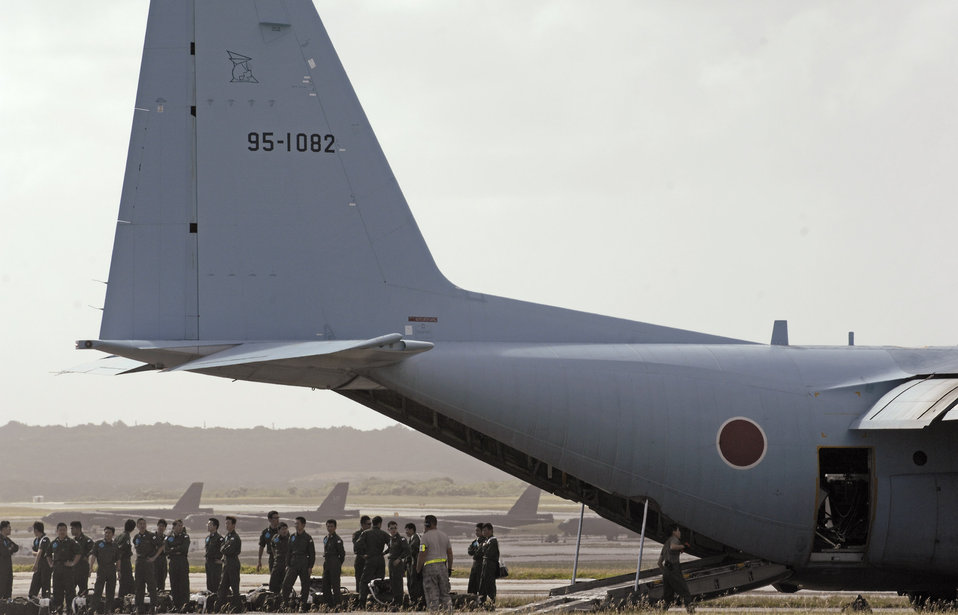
Japan forces arrive in Guam for joint exercise

Japan Air Self Defense Force members wait outside of their C-130 after arriving Jan. 27 at Andersen Air Force Base, Guam. More than 60 JASDF members arrived in three C-130s to participate in Exercise Cope North 09-1, a regularly scheduled exercise scheduled for Feb. 2 through 13. Cope North is designed to enhance U.S. and Japanese air operations in defense of Japan. JASDF F-2s from Tsuiki Air Base, Japan, and E-2Cs from Misawa AB, Japan, will join forward deployed U.S. Air Force F-16 Fighting Falcons from Eielson Air Force Base, Alaska, B-52 Stratofortress' currently deployed to Andersen AFB, and Navy EA-6B from VAQ-136 Carrier Air Wing Five, Atsugi, Japan, will participate in this year's exercise with a focus on interoperability.